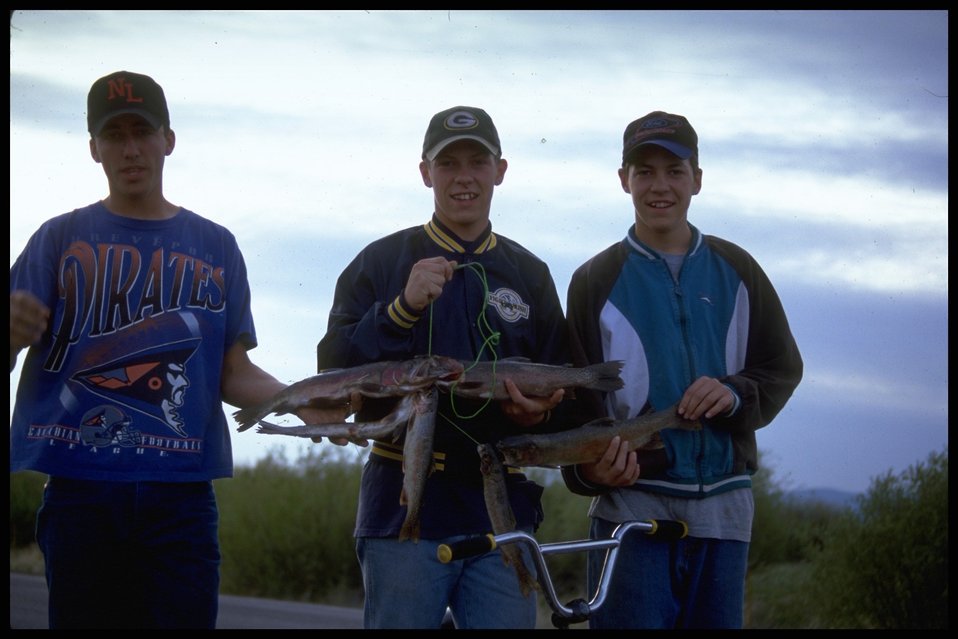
Boys posing with fish, Lakeview District.